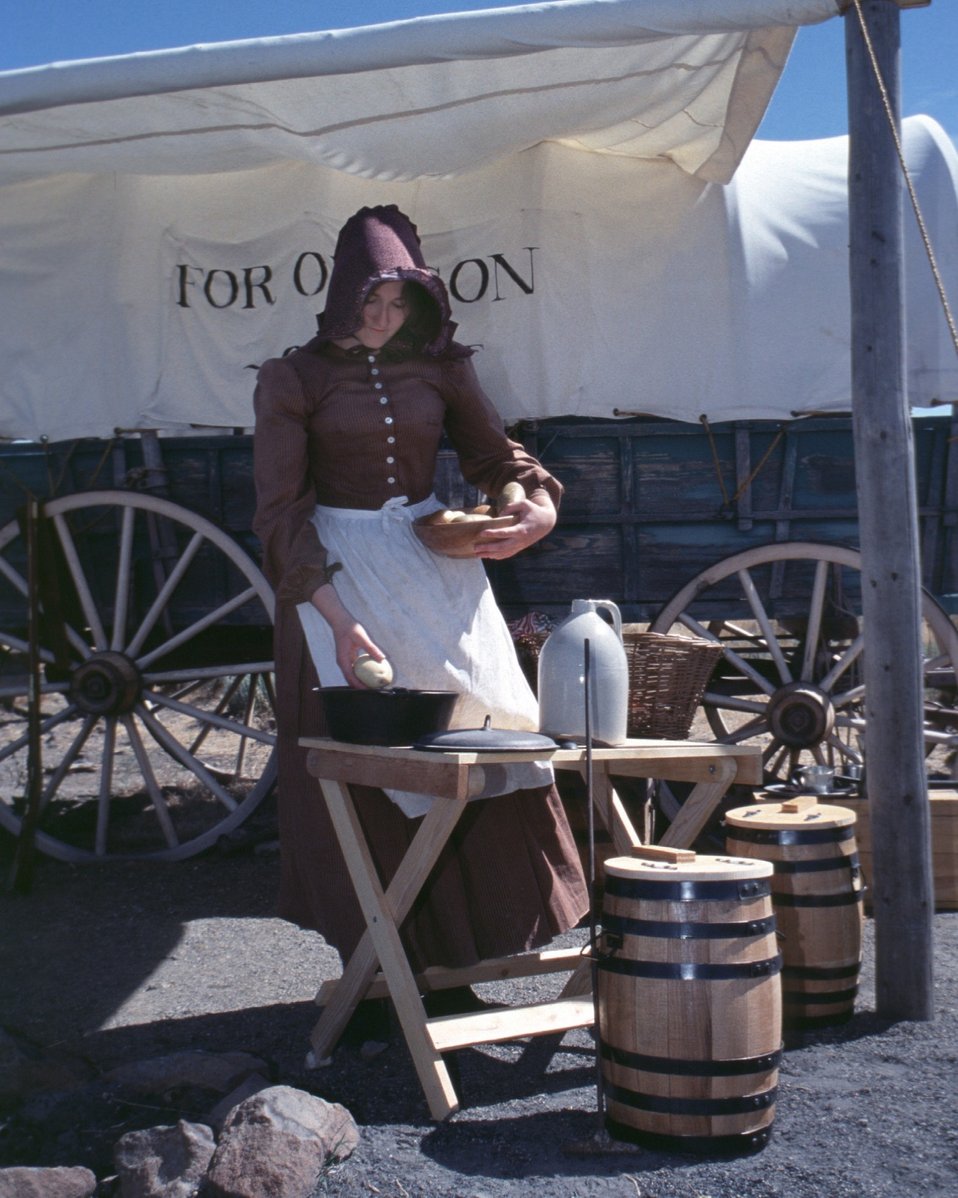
Rebecca Crow portrays a pioneer woman cooking on the Oregon Trail.